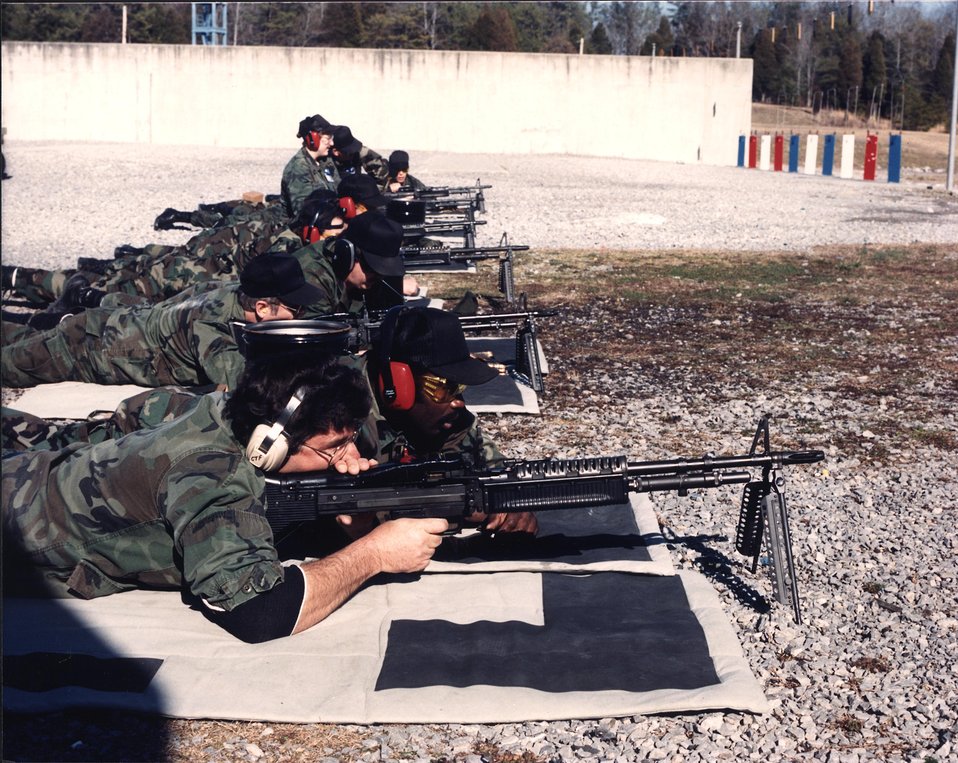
Aligning the sights at outdoor rifle range.